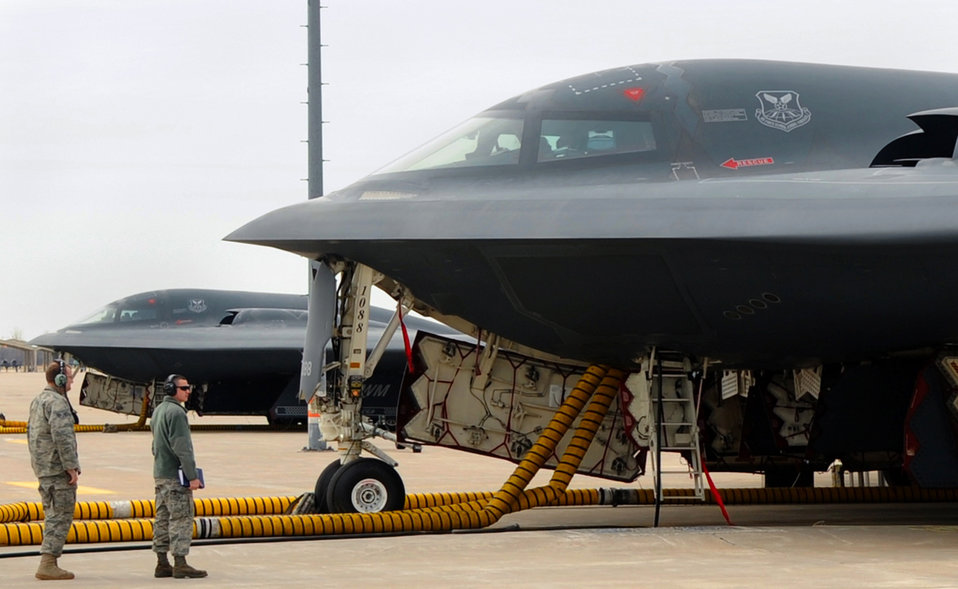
AFGSC Airmen support Operation Odyssey Dawn

Maintainers and crew chiefs from the 509th Aircraft Maintenance Squadron prepare B-2 Spirits March 19, 2011, at Whiteman Air Force Base, Mo., in support of Operation Odyssey Dawn.